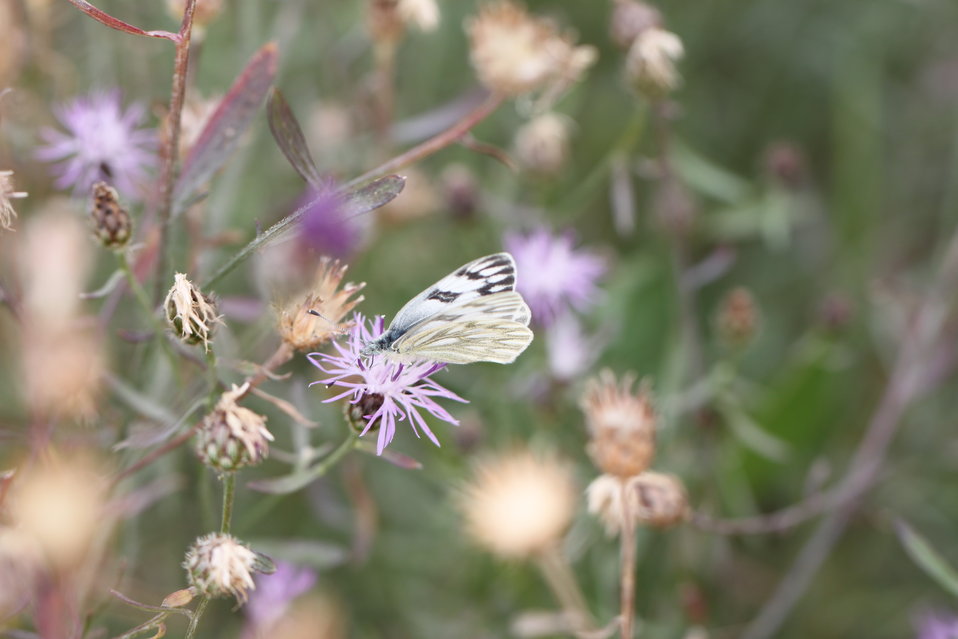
Checkered White

Pontia protodice nectaring on spotted knapweed; at times this butterfly is an indicator of disturbed habitats.